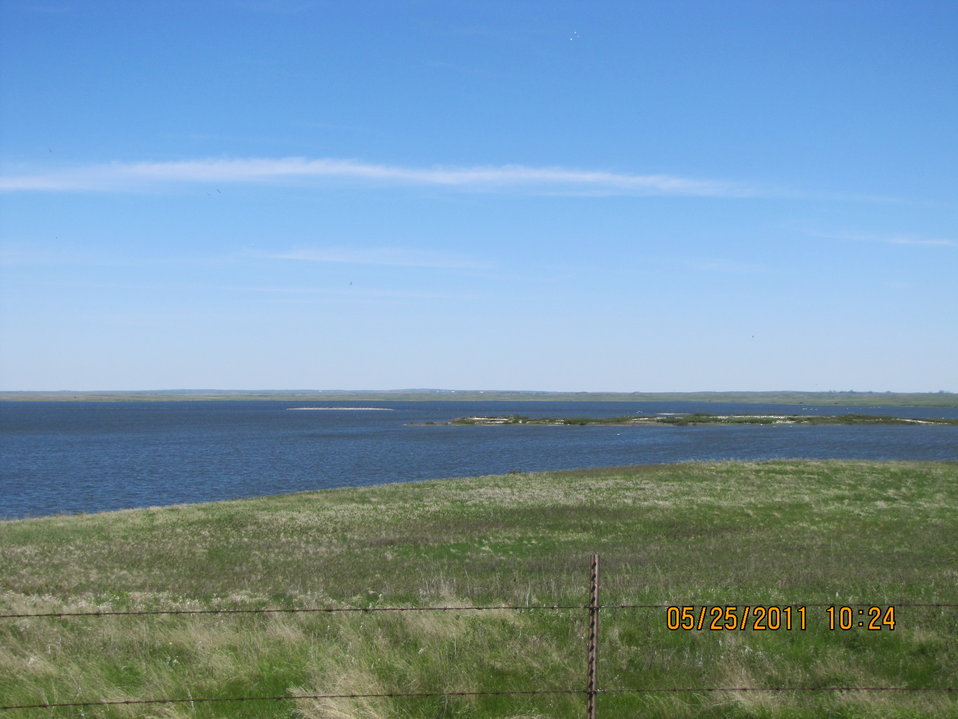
View of nesting island

Two of the three nesting islands found in Chase Lake National Wildlife Refuge (NWR) in North Dakota. View from the south. High water levels have decreased the three islands sizes in 2011.